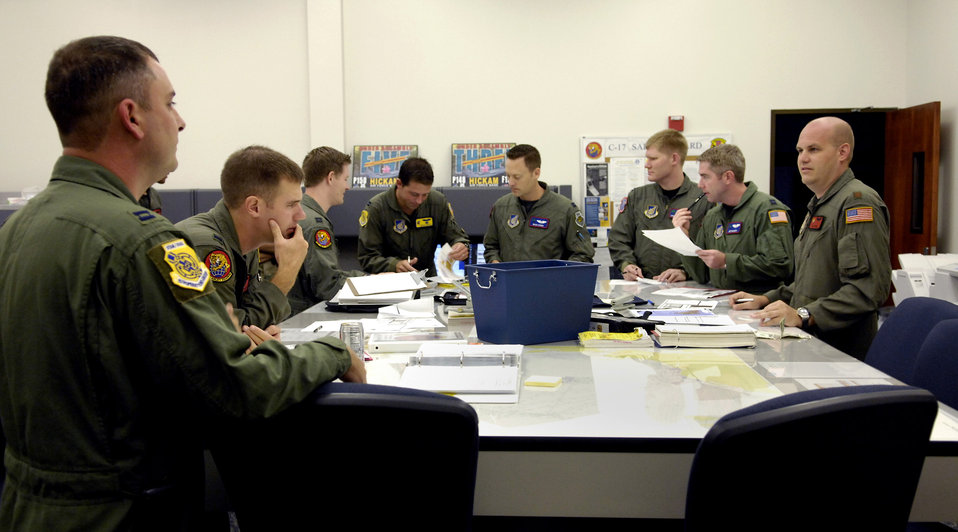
Hickam Airmen conduct 4-ship C-17 airdrop training

Pilots from the 535th Airlift Squadron conduct a preflight briefing prior to leaving for a four-ship airdrop training mission Aug. 13 at Hickam Air Force Base, Hawaii. The Airmen are conducting the multi-element airdrop training to maintain currency and proficiency.